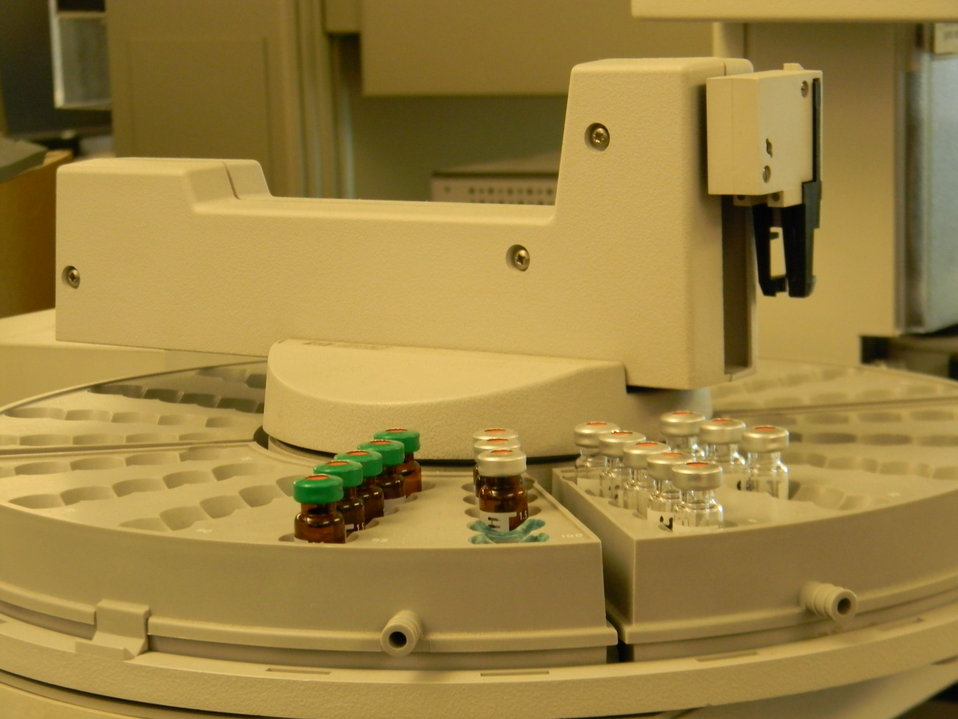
IRP equipment